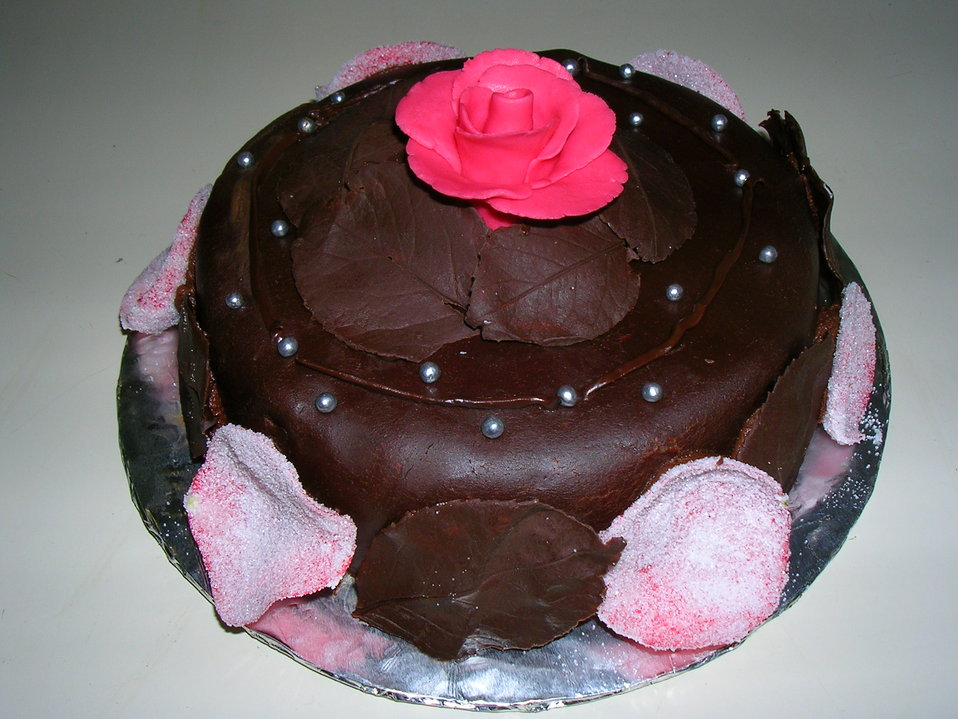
Photograph and cake created by Mary-Irene Lang.